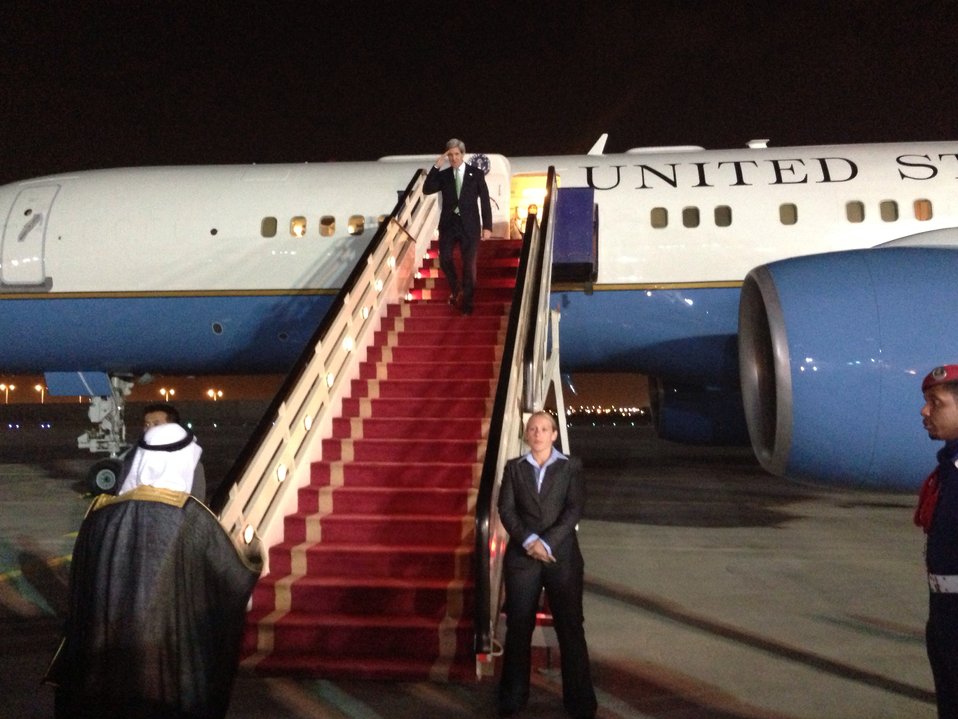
Secretary Kerry Arrives in Saudi Arabia

U.S. Secretary of State John Kerry is greeted by Saudi Arabian Foreign Minister Saud al-Faisal upon his arrival to Riyadh, Saudi Arabia, on March 3, 2013.